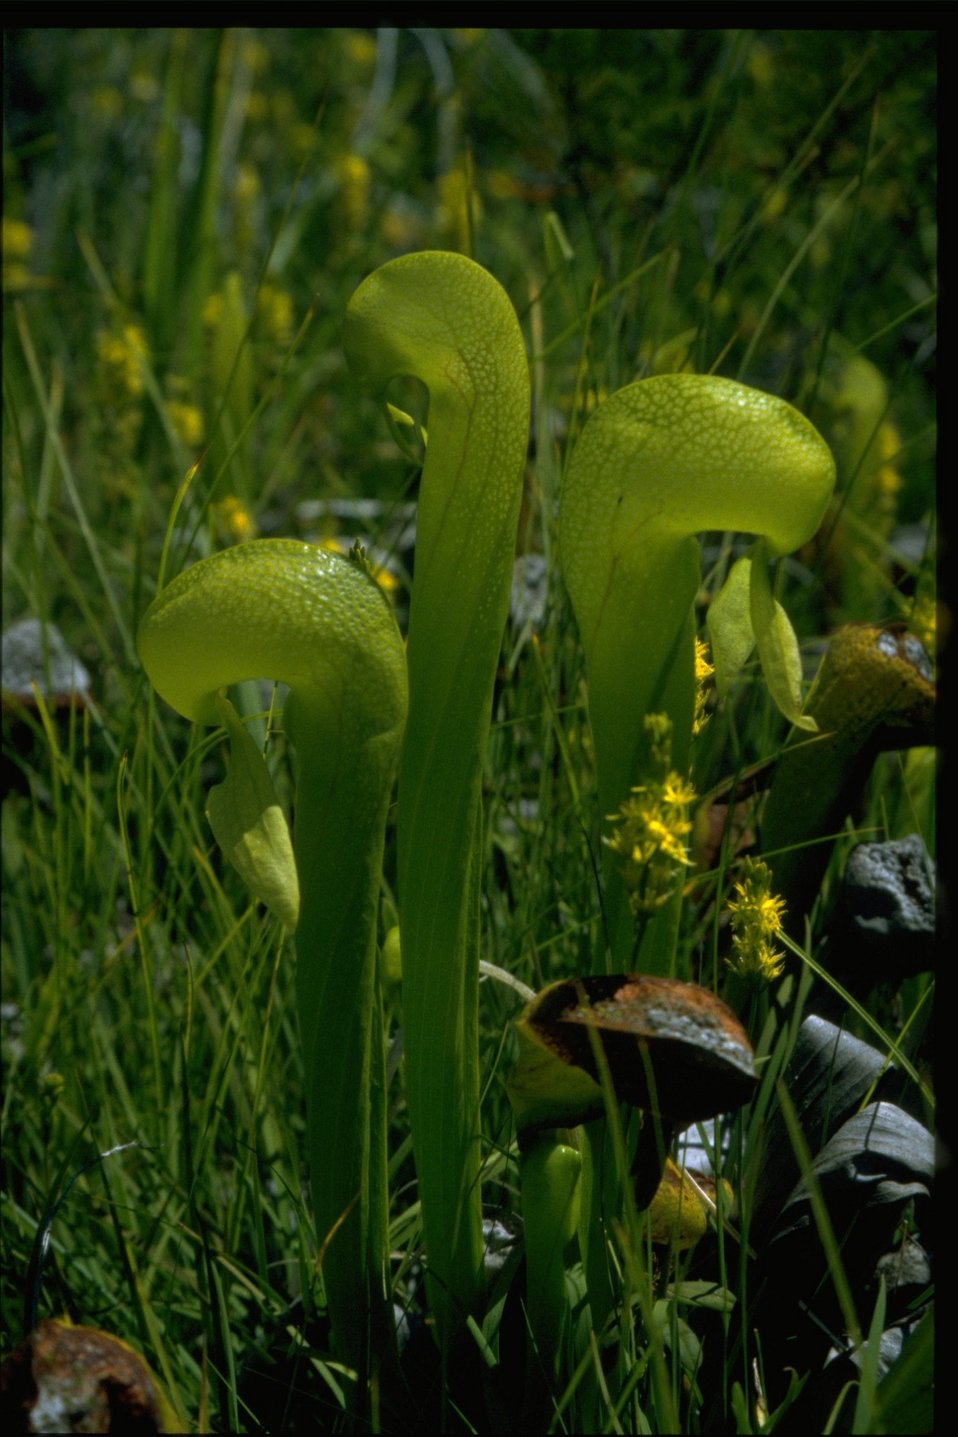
Closeup shot of Cobra Lily, Darlingtonia californica.